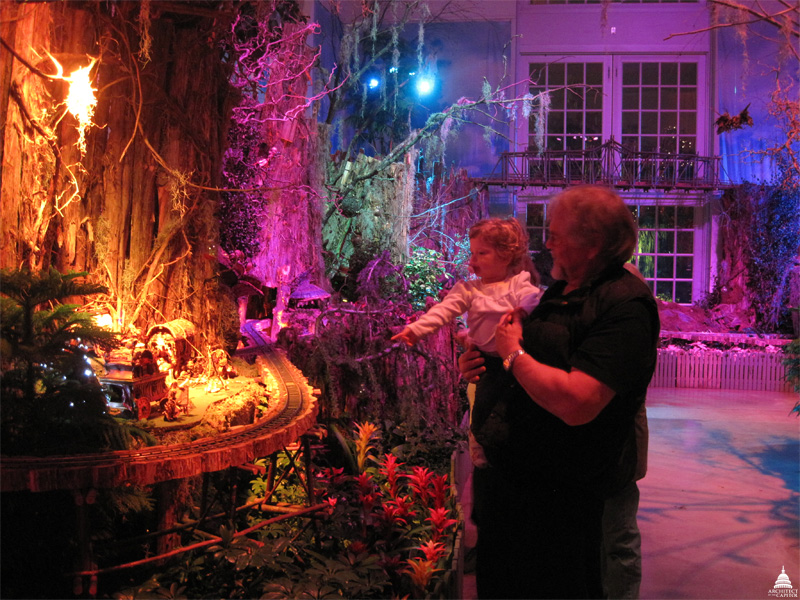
Enchanted Forest at the U.S. Botanic Garden

The Garden Railway Exhibit in the East Gallery features model trains through an Enchanted Forest with fanciful fairy dwellings along the rail line, all created with plant materials.